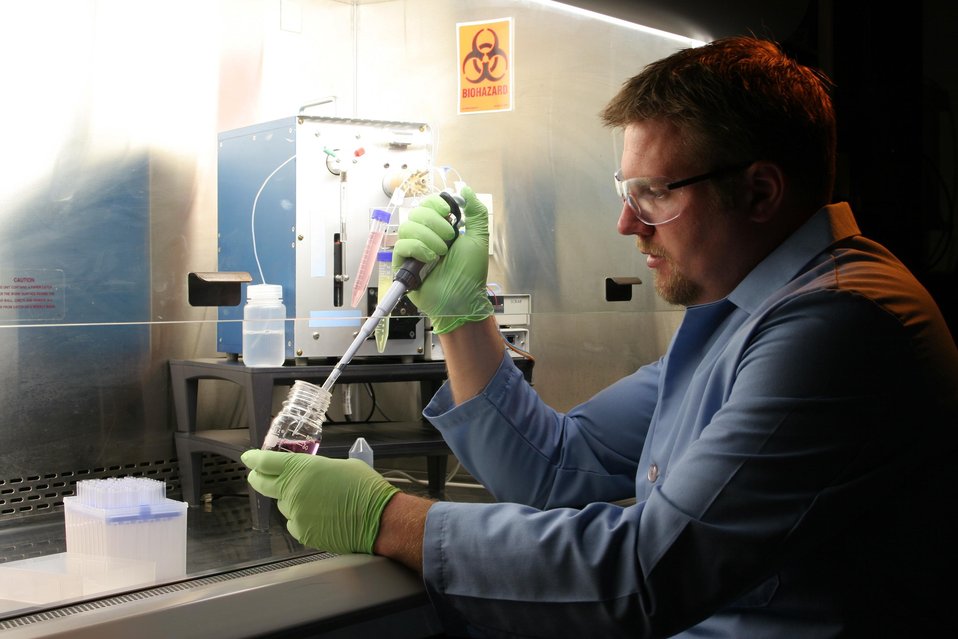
A PACIFIC NORTHWEST NATIONAL LABORATORY RESEARCHER WORKS AT THE AUTOMATED NUCLEIC ACID PURIFICATION SYSTEM.

THE AUTOMATED NUCLEIC ACID PURIFICATION SYSTEM IS DESIGNED FOR THE QUICK RECOVERY, CONCENTRATION, AND CLEANUP OF NUCLEIC ACIDS FROM ENVIRONMENTAL SAMPLES. THIS TECHNOLOGY WILL BENEFIT NATIONAL AND HOMELAND SECURITY BY ALLOWING HARMFUL BACTERIAL IN CLINICAL, AGRICULTURAL, INDUSTRIAL AND ENVIRONMENTAL SAMPLES TO BE DETECTED.